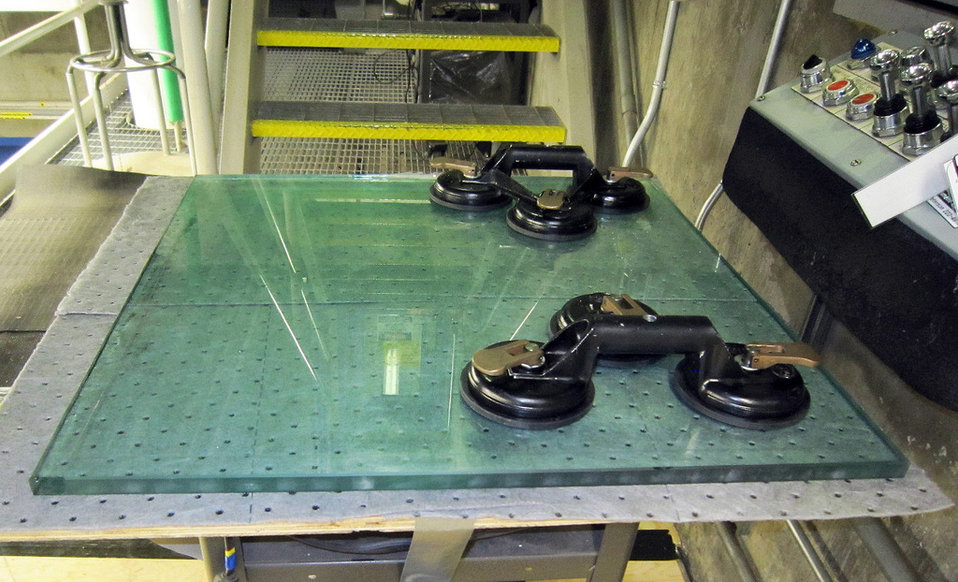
242-A evaporator hot cell window refurbishing saves repair cost at Hanford.

The window consists of two thick lead-glass panes with spaces filled with 40 gallons of mineral oil. As oil ages, it gets dark and contaminated with water. The moisture forms a paraffin wax that clouds the glass. Eventually this can etch the glass, requiring off-site servicing. Sending the window off-site for refurbishing would require removing a 4,000 pound block of lead glass from the hot site of the window and opening the contaminated pump room. Refurbishing the window only required dismantling the cold side of the window.